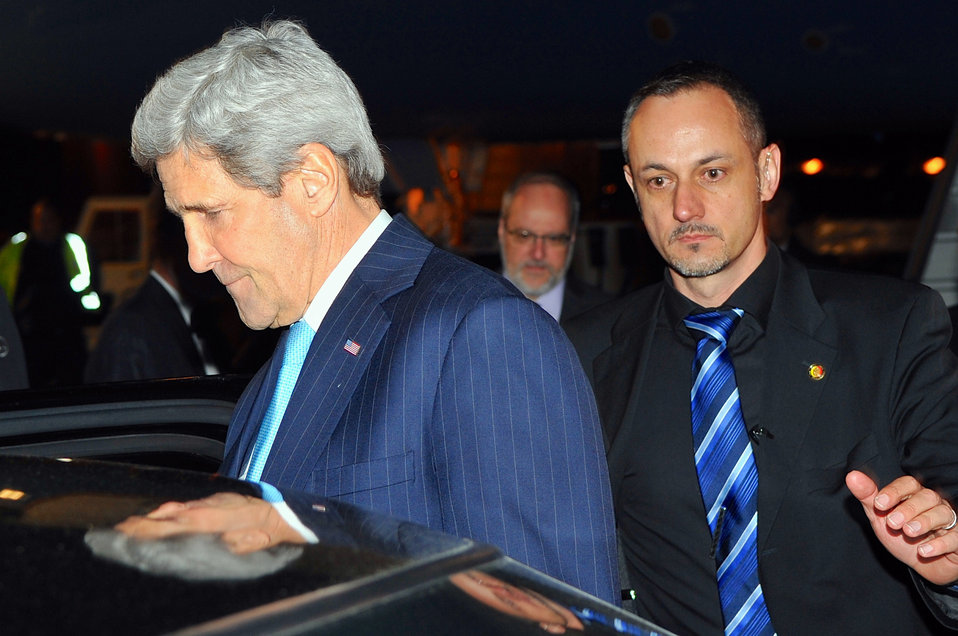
Secretary Kerry Boards Automobile for Ride into Geneva and Ukraine Meetings

U.S. Secretary of State John Kerry is seen reflected on the roof of his automobile after arriving at Geneva International Airport in Switzerland on April 16, 2014, for meetings with Ukrainian, Russian, and European Union officials focused on Ukraine.